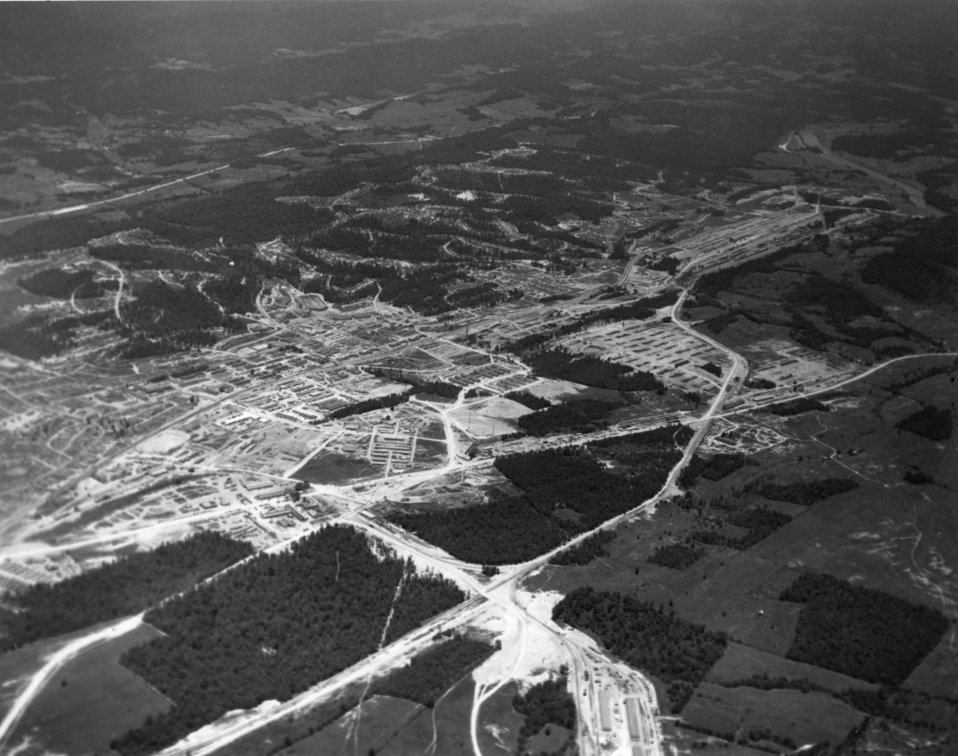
Aerial of Oak Ridge